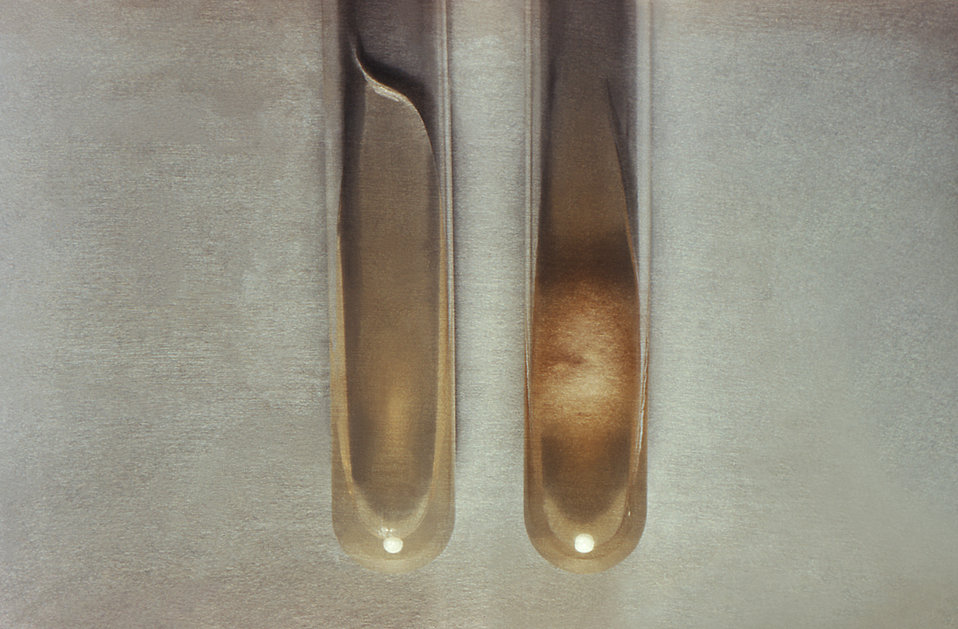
The two test tubes depicted here were being used to carry out a nutritional test involving the identification of various dermatophytic fungal organisms. In this particular instance, the dermatophyte, Trychophyton megninii, was being examined, focusing on its histidine requirements.